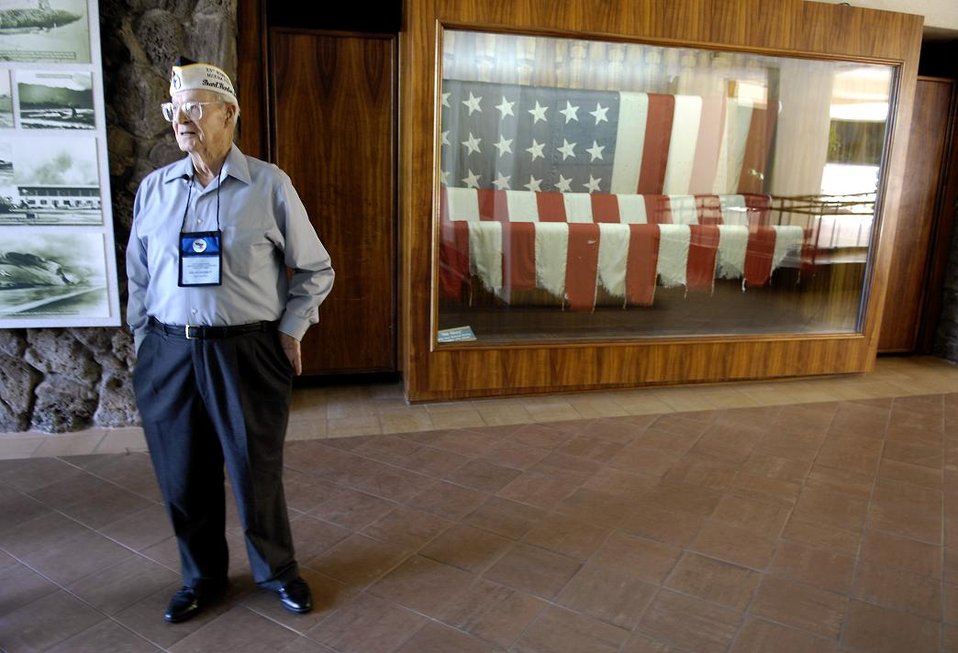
Retired Chief Master Sgt. Ralph Barnett stands in the foyer of the Pacific Air Forces Headquarters building Dec. 4 at Hickam Air Force Base, Hawaii. The flag that Chief Barnett is standing in front of was the flag that flew over Hickam Field during the attack on Dec. 7, 1941.